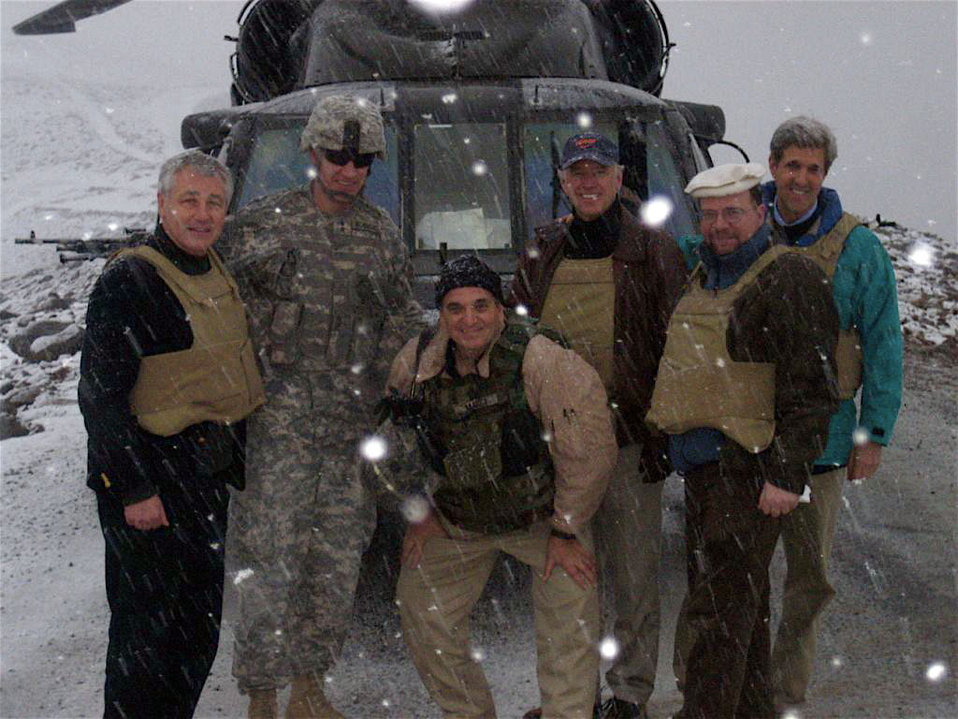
Joe Biden, John Kerry, and Chuck Hagel in Kunar Province

Then-Senators Joe Biden, John Kerry, and Chuck Hagel in Kunar Province in eastern Afghanistan, February 20, 2008.